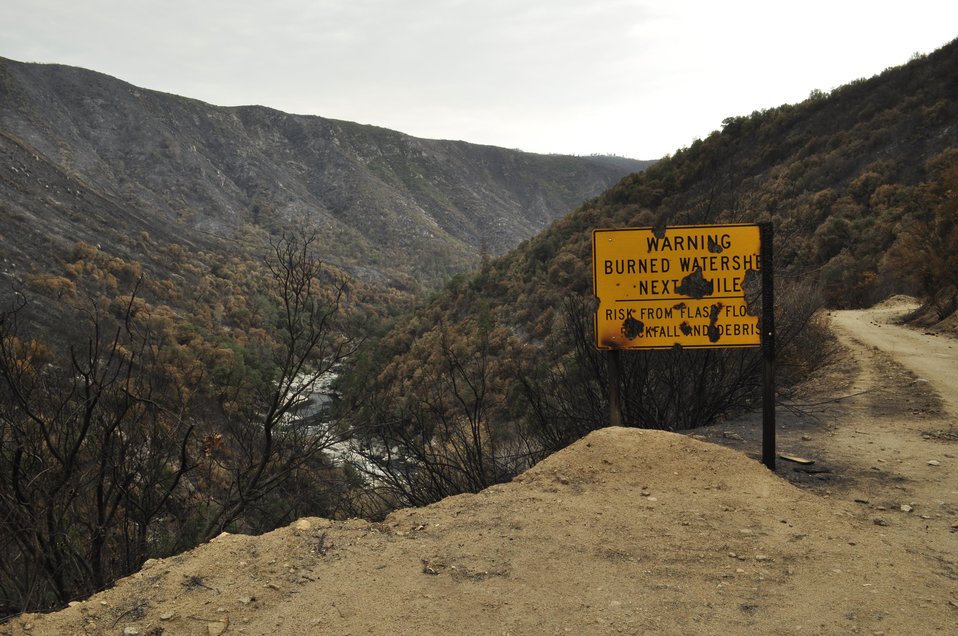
A burned watershed warning sign that was burned in the Rim Fire marks the entrance to a damage area. BAER is a rapid assessment of burned watersheds by a BAER team to identify imminent post-wildfire threats to human life and safety property and critical natural or cultural resources on National Forest System lands and take immediate actions to implement emergency stabilization measures before the first major storms. Fires result in loss of vegetation exposure of soil to erosion and increased water runoff that may lead to flooding increased sediment debris flows and damage to critical natural and cultural resources. BAER team members implement seeding and mulching installation to prevent erosion, erect temporary water run-off control structures that will protect recovering areas, and installation of warning signs, replace safety related facilities, remove safety hazards, prevent permanent loss of habitat for threatened and endangered species, and prevent the spread of noxious weeds and protect critical cultural resources. The Rim Fire in the Stanislaus National Forest near in California began on Aug. 17, 2013 and is under investigation. The fire has consumed approximately 256,169 acres and is 84% contained.